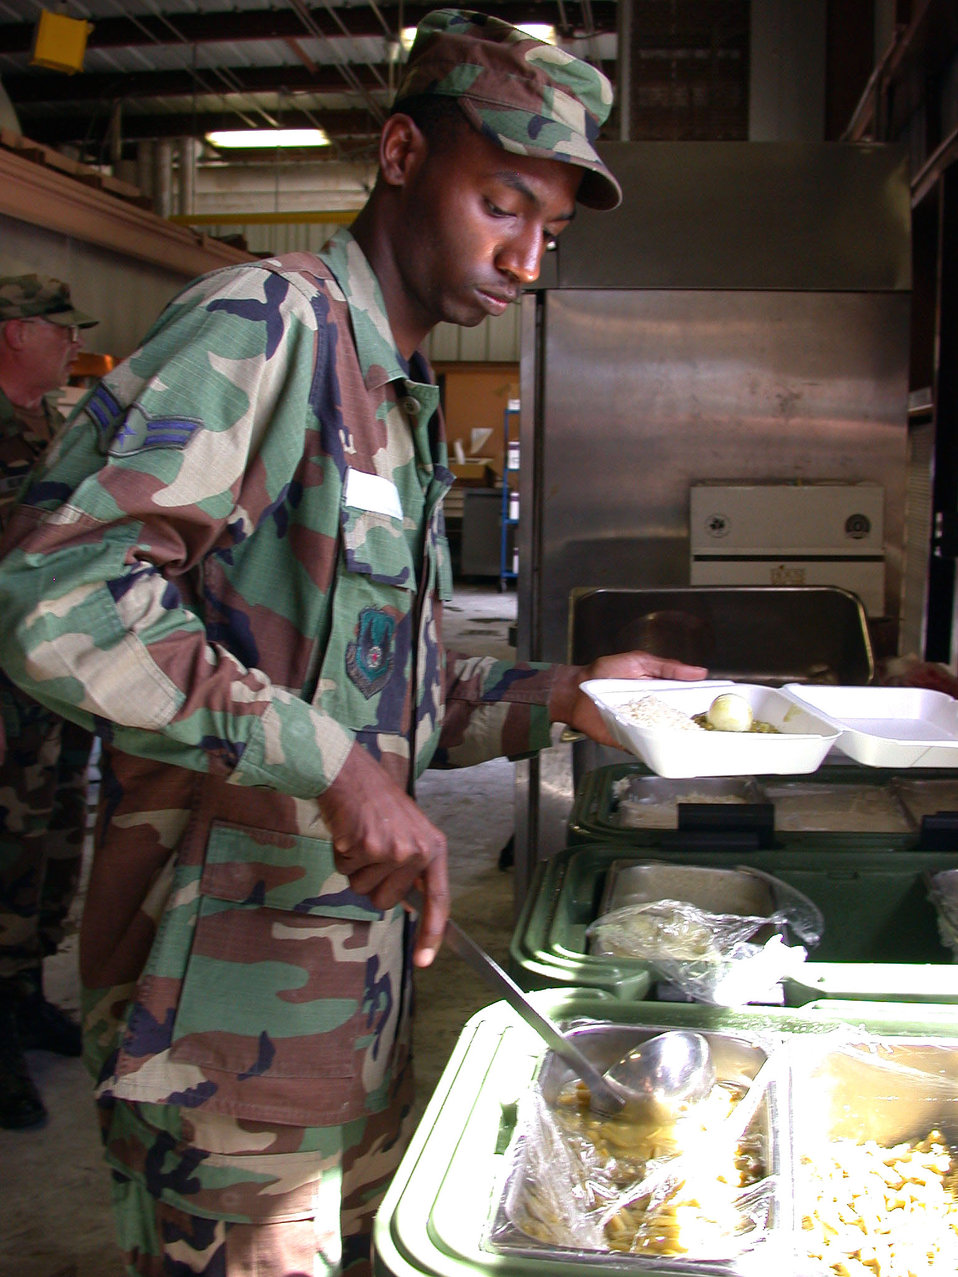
Brown

U.S. NAVAL BASE GUANTANAMO BAY, Cuba -- Airman 1st Class Everett Brown is one of a handful of airmen supporting Joint Task Force-Guantanamo. He is responsible for preparing and serving culturally certified meals to the detainees here. Brown is a services worker deployed from Kirtland Air Force Base, N.M.